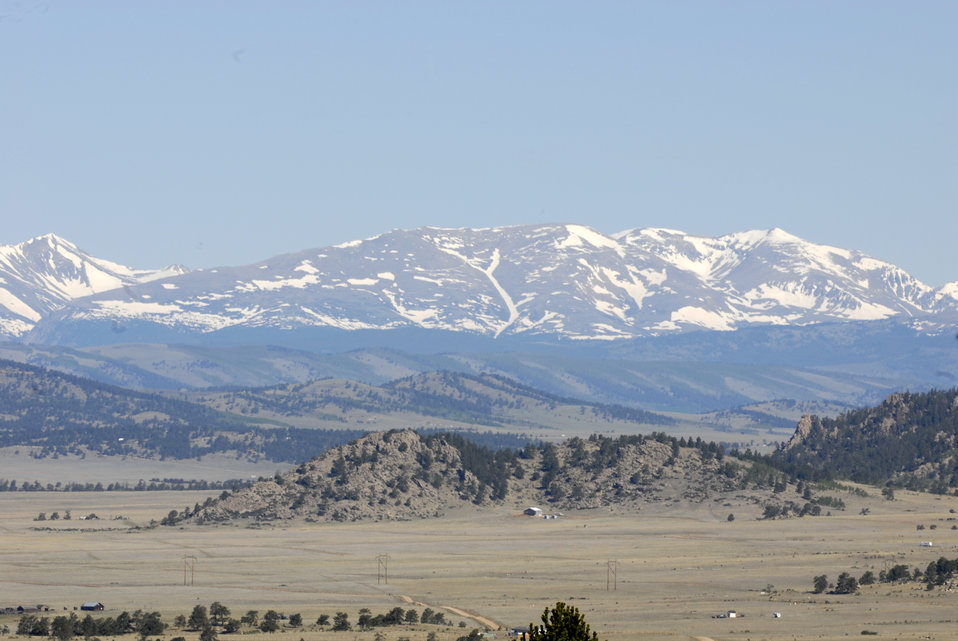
The Rocky Mountains are seen in the background of the San Isabel and Gunnison National Forests, Colorado on June 12, 2012.